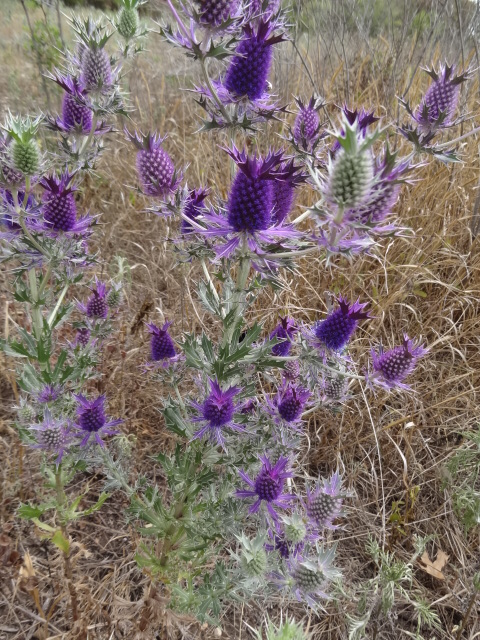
Prairie Wildflowers

Leavenworth eryngo (Eryngium leavenworthii) at Marais des Cygnes National Wildlife Refuge.